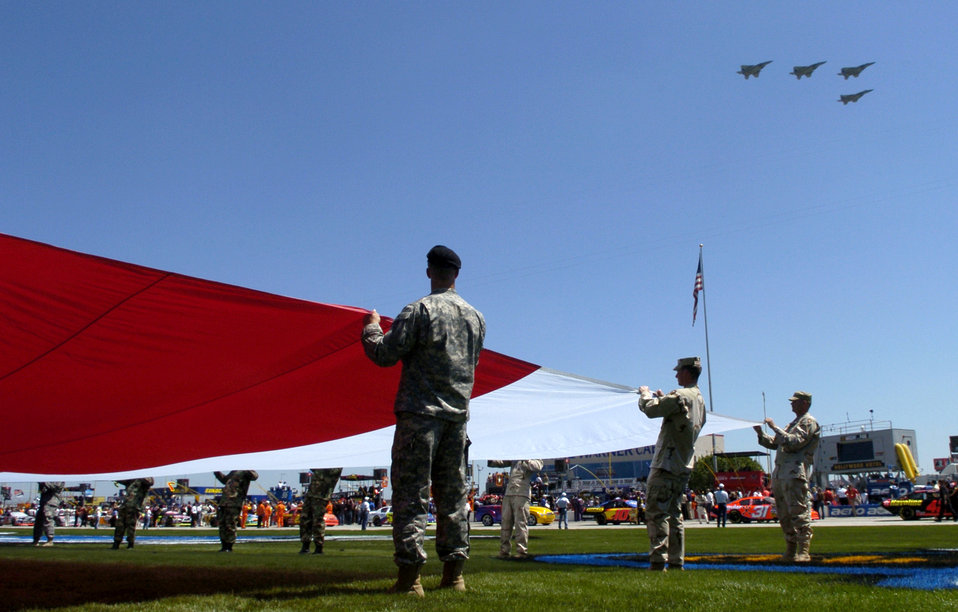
NASCAR thrills

Air Force F-15 Eagles fly over the Texas Motor Speedway as a group of Texas active duty, Guard and Reserve Soldiers display the flag during the National Anthem. The flyover signaled the start of the NASCAR Nextel Cup, Samsung/RadioShack 500 on Sunday, April 9, 2006, at Texas Motor Speedway.